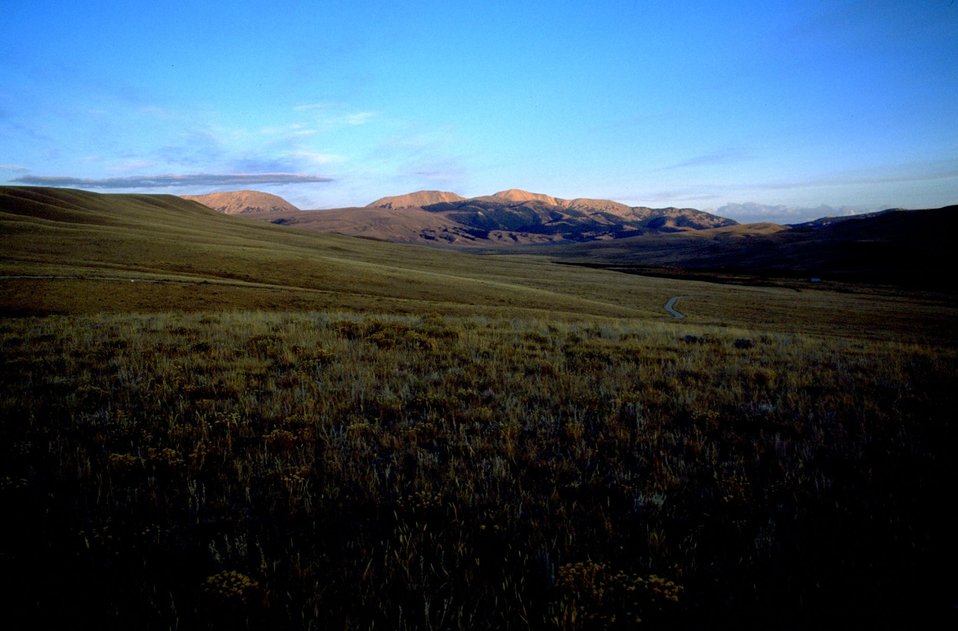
Sunset over grassy hills with mountains in background